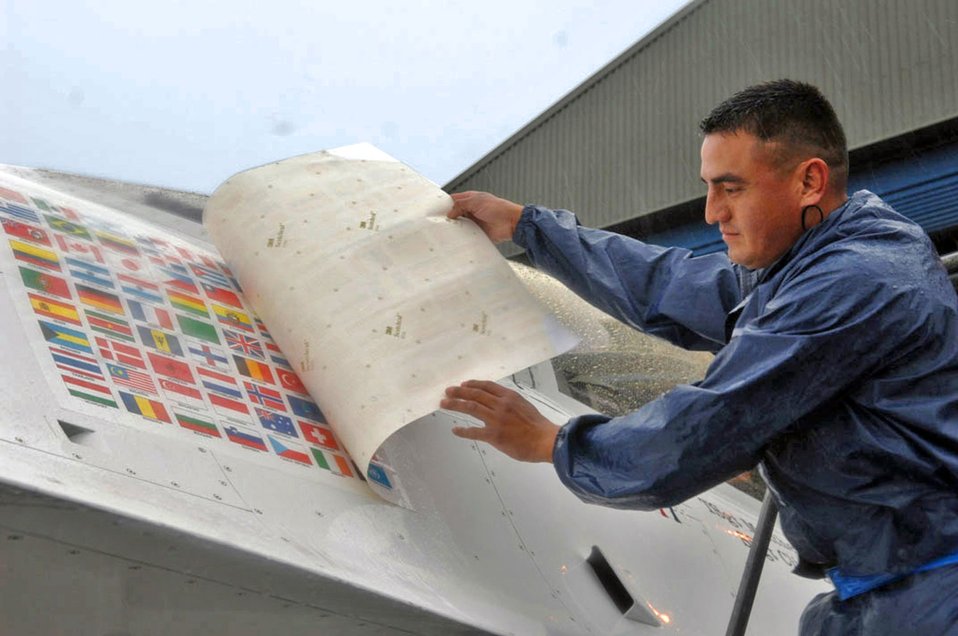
Thunderbirds begin European good-will tour

Prior to the Air Force Thunderbirds performing at the Salthill Air Show in Galway, Ireland, June 22, Staff Sgt. Adrian Quezada unveils the new Thunderbird flag panel, which now includes an Irish flag. This is the first time the Thunderbirds have performed over Irish soil. More than 100,000 people attended the air show, which was the team's first stop on their 2007 European Goodwill Tour. Sergeant Quezada is an assistant crew chief with the Thunderbirds.